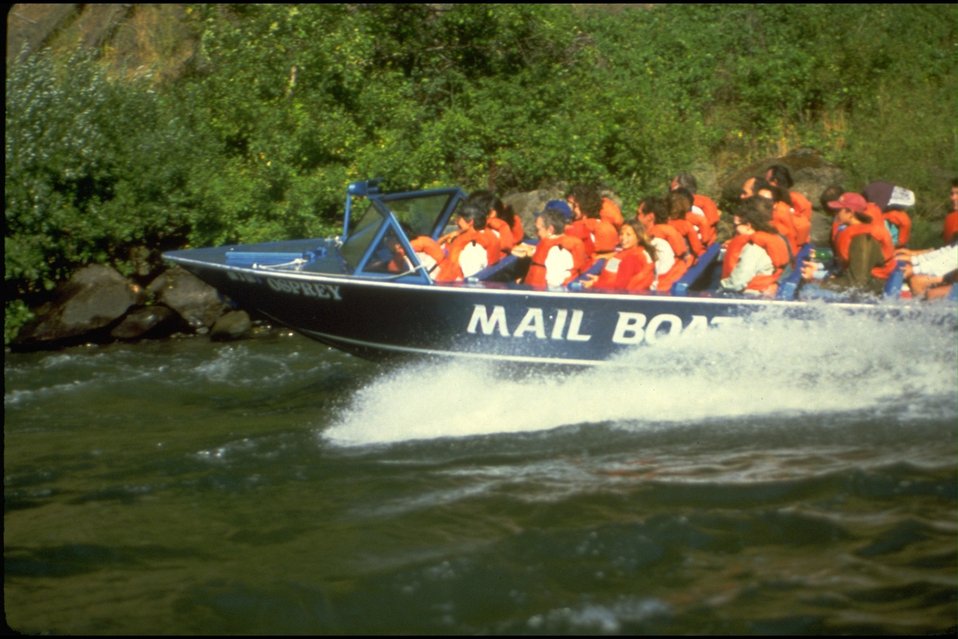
Rogue River - Wild section. Commercial Jet boat from Gold Beach "Mail Boat".